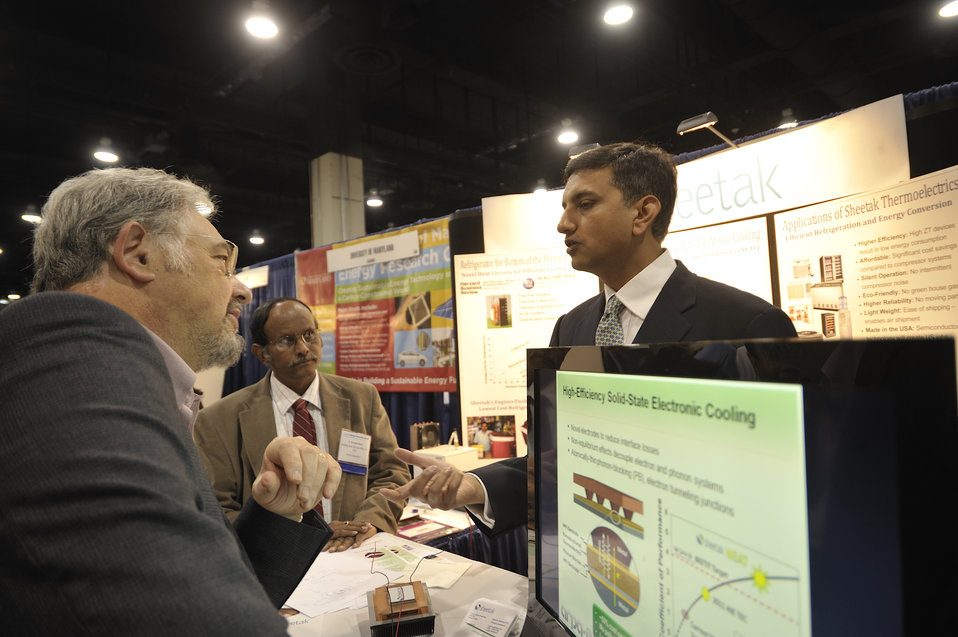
ARPA-E Energy Innovation Summit 2011, 43 of 83

Sheetak Thermoelectrics booth at the Summit's Technology Showcase.